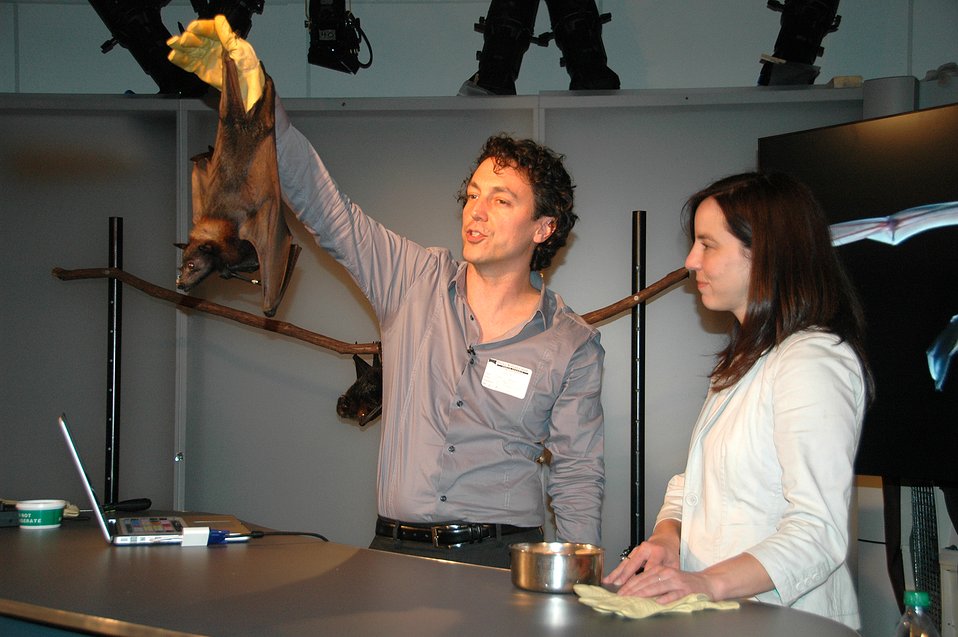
Rob Mies and Ann Froschauer with the Malayan Flying Fox

Rob Mies (Organization for Bat Conservation), a Malayan Flying Fox, and Ann Froschauer (USFWS) in dress rehearsal for the BatsLIVE! Distance Learning Adventure